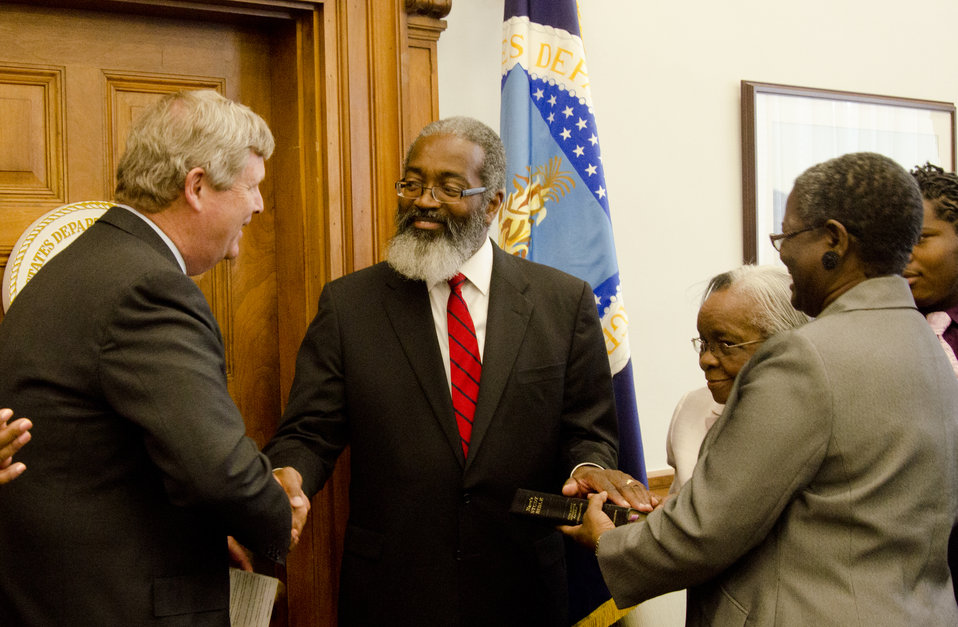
Agriculture Secretary Tom Vilsack congratulates Dr. Greg Parnham after swearing in Parham as the new Assistant Secretary for Administration at the U.S. Department of Agriculture (USDA) in Washington, D.C. on Wednesday, Jun. 12, 2013. Dr. Parnham was accompanied by family members.